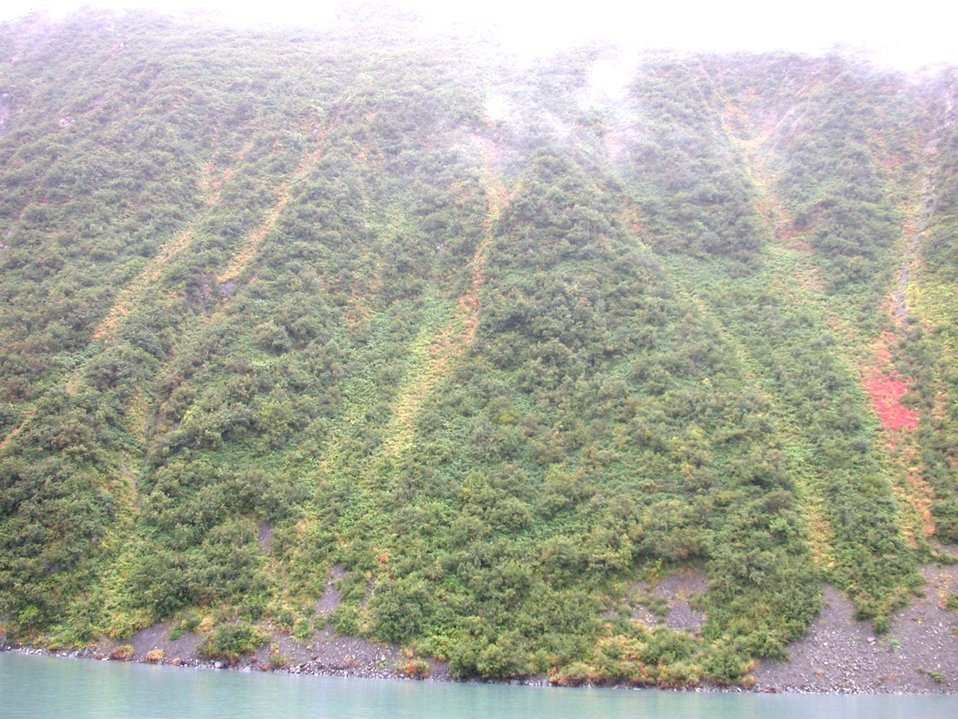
Kenai Fjords area from offshore showing low brush and beginnings of fall colors.